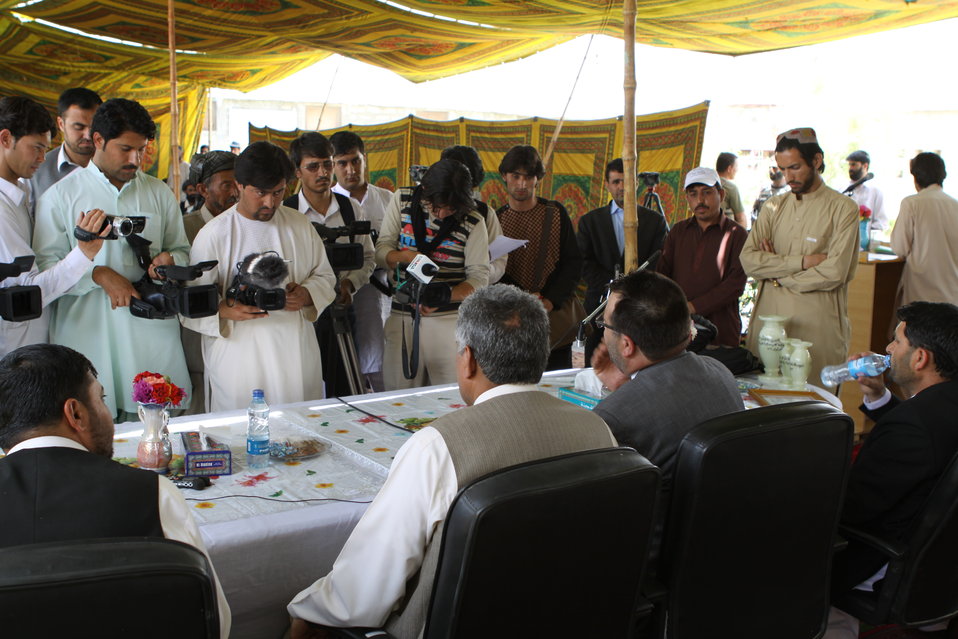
Bolan Poultry Farm